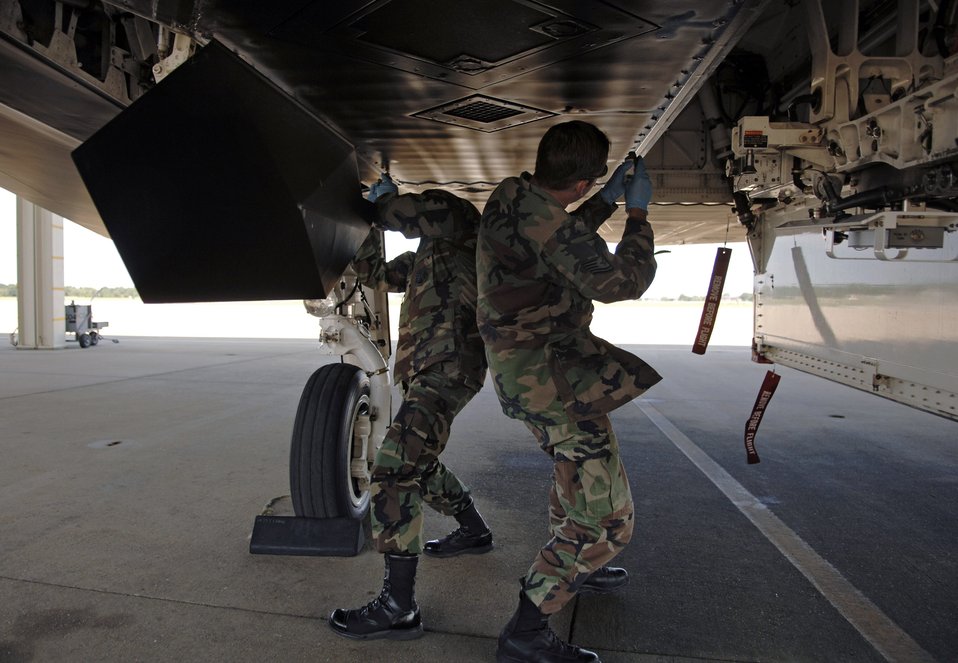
Keeping it ready to fly

Staff Sgt. Anthony Hyland (left) and Tech. Sgt. Eric Brennon check over an F-117 Nighthawk Aug. 14 during preflight maintenance at Langley Air Force Base, Va.